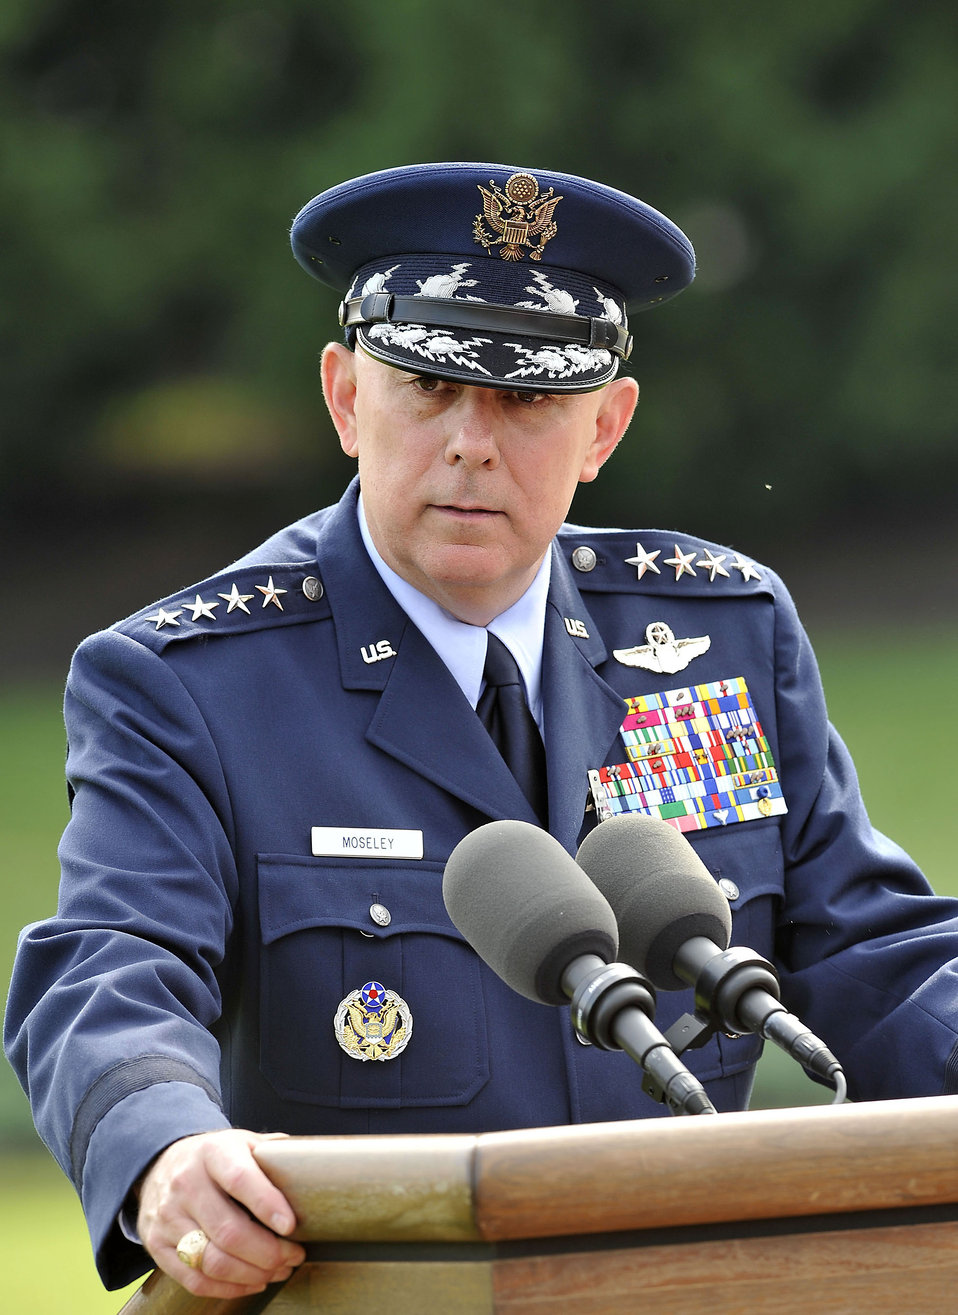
CSAF Retirement Ceremony

Air Force Chief of Staff Gen. T. Michael Moseley addresses the audience during his retirement ceremony July 11 at Bolling Air Force Base, D.C.